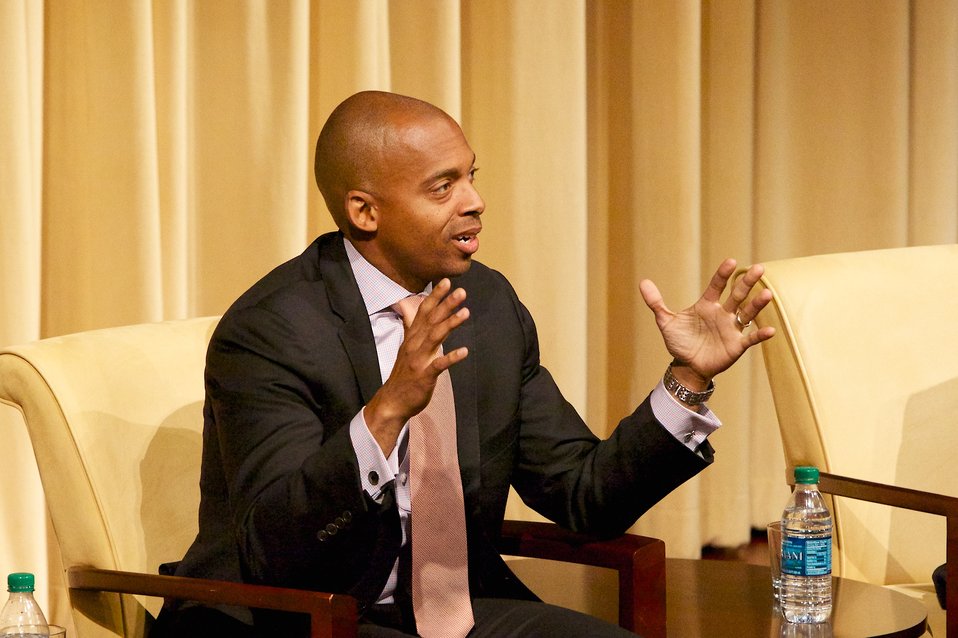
Solomon Northup's Odyssey